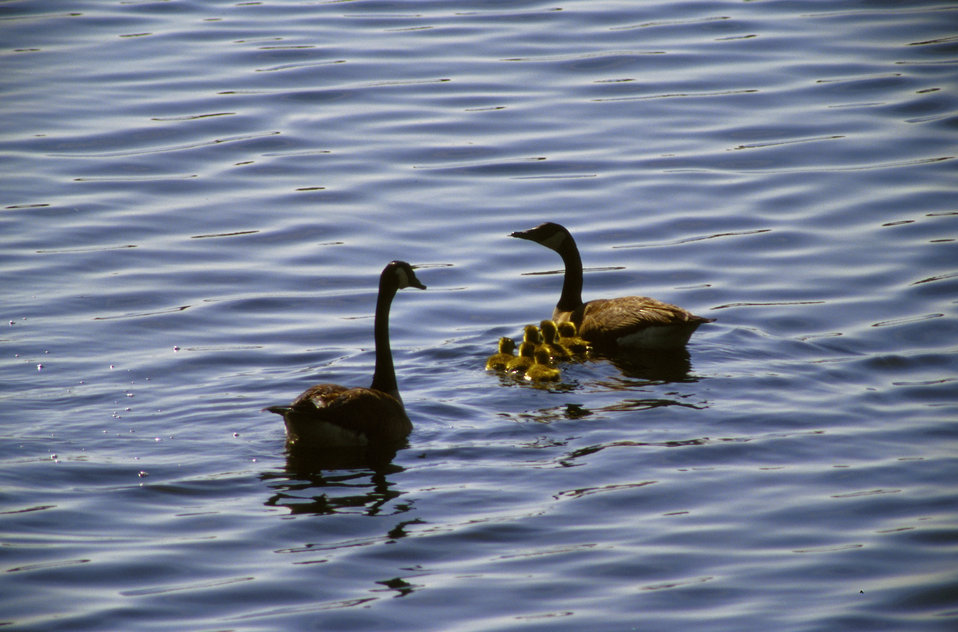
Canada Geese with Chicks

A close view of a pair of Canada Geese and goslings.